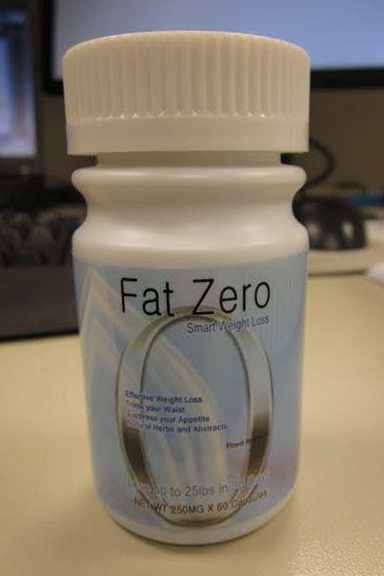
Fat Zero

June 18, 2013 - The FDA is advising consumers not to purchase or use Fat Zero, a product promoted and sold for weight loss. The product was found to contain undeclared sibutramine and phenolphthalein. For more information, go to www.fda.gov/Drugs/ResourcesForYou/Consumers/BuyingUsingMe...

And read this Consumer Update: Beware of Fraudulent ‘Dietary Supplements’